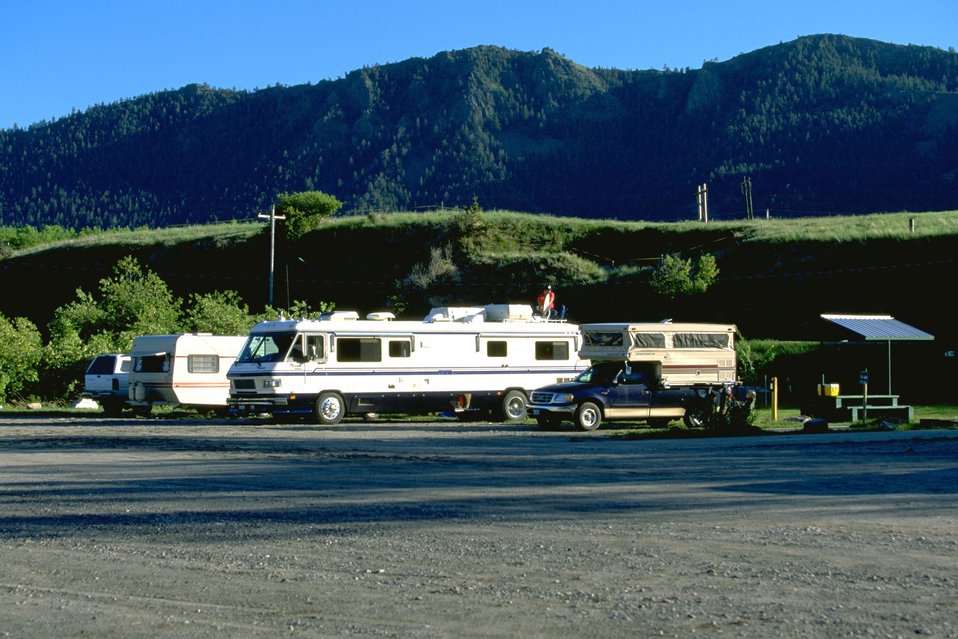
Campers at Holter Dam Campground